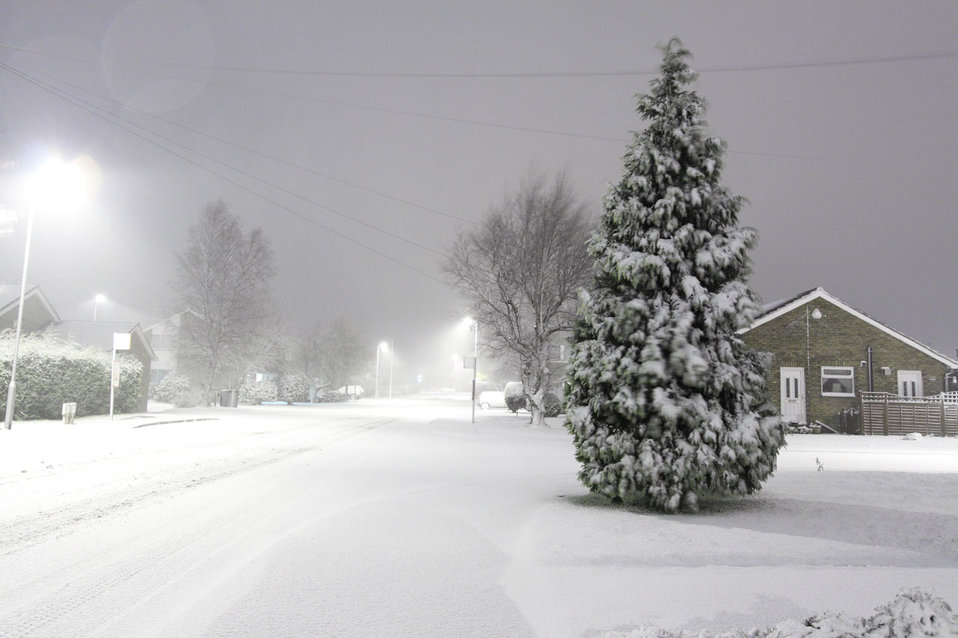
Snow storm

There was a lot of snow that morning.